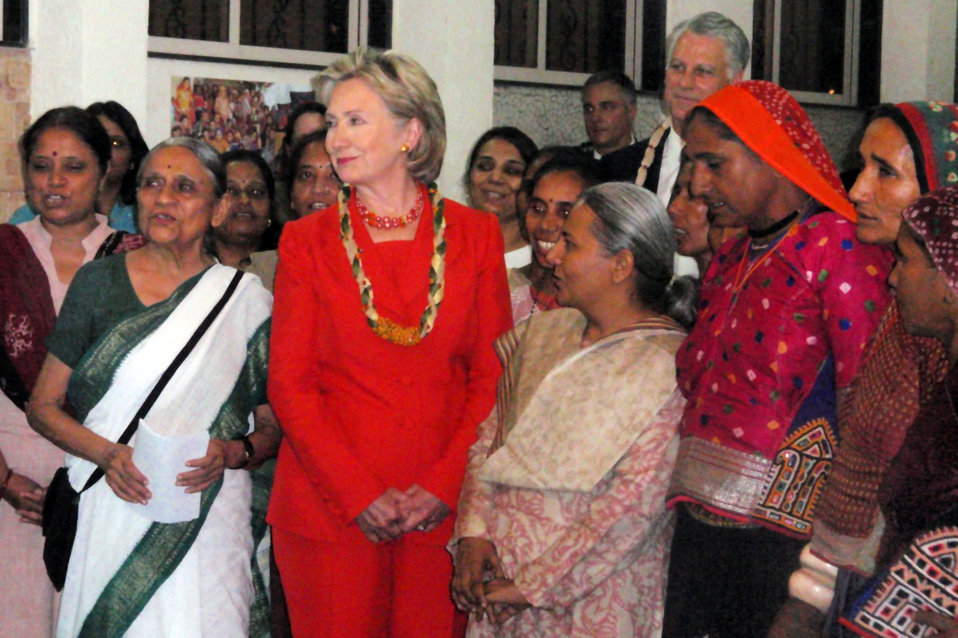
Behind the Scenes: SEWA Hansiba Store

U.S. Secretary of State Hillary Rodham Clinton poses for photographs with members of SEWA (Self Employed Women's Association) in Mumbai, India July 18, 2009.